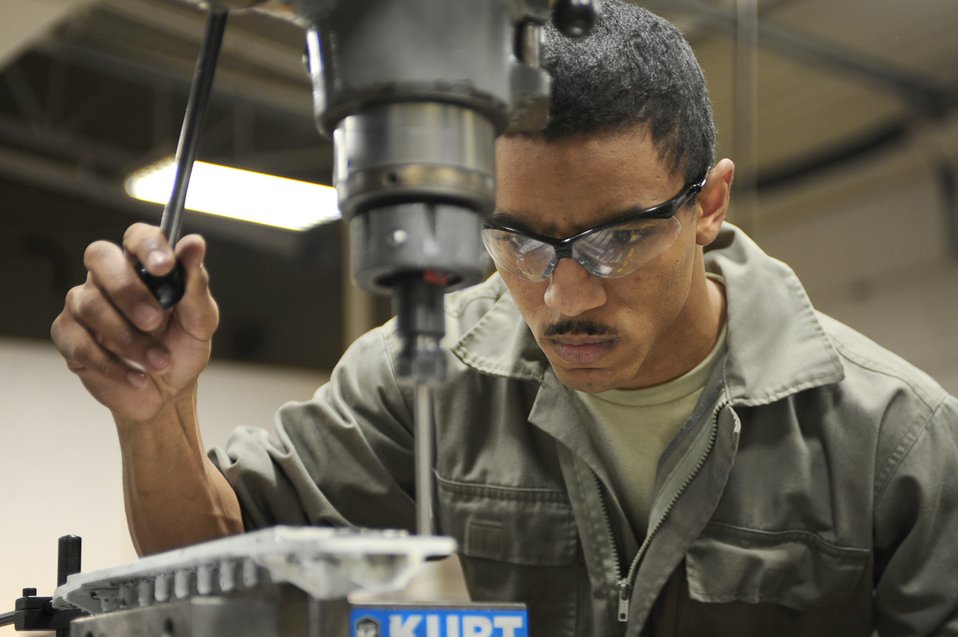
Tungsten inert-gas welding

Airman 1st Class Darrell Tate positions a drill on an old bracket before milling on the replacement bracket Jan. 26, 2011, at Ellsworth Air Force Base, S.D. Airman Tate is an aircraft metals technology technician assigned to the 28th Maintenance Squadron.